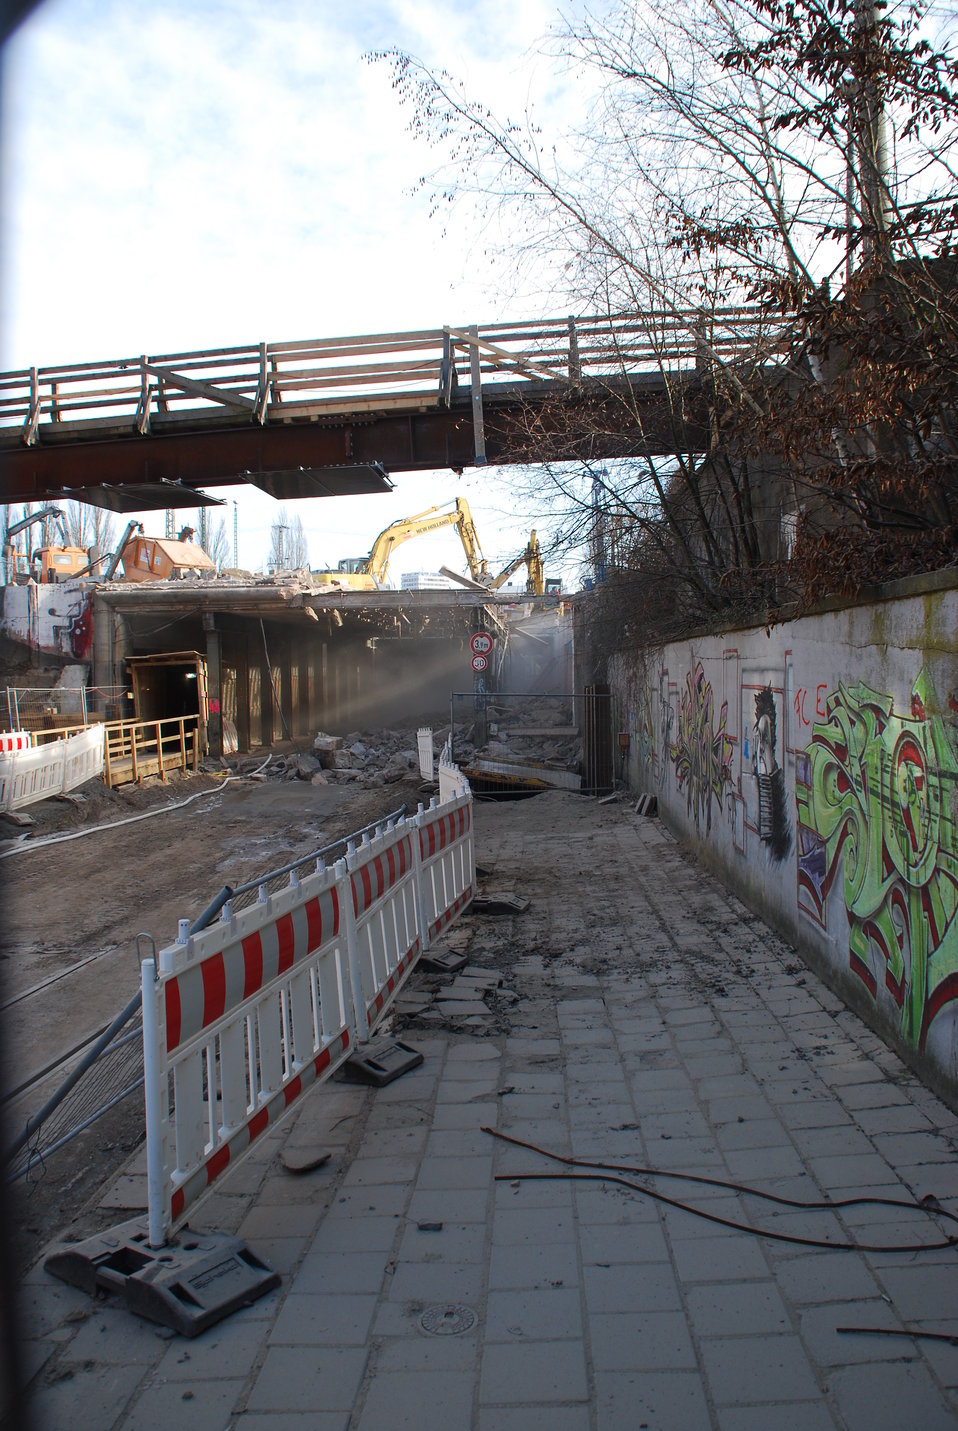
Abriss Bahnhofstunnel Frankfurt (Oder)